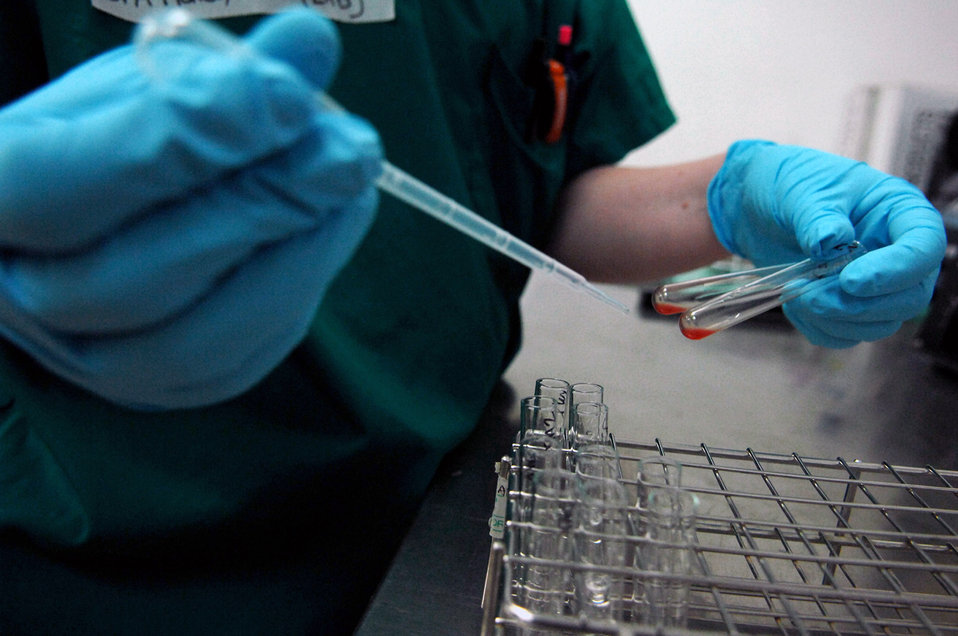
Blood test

Senior Airman Kristi Hales puts saline into small vials of blood to determine the blood type of a trauma patient at the Air Force Theater Hospital June 5 at Balad Air Base, Iraq. Blood typing enables the technicians to give the correct type of blood product to the patient. Airman Hales is a 332nd Expeditionary Medical Support Squadron lab technician deployed from Lackland Air Force Base, Texas.